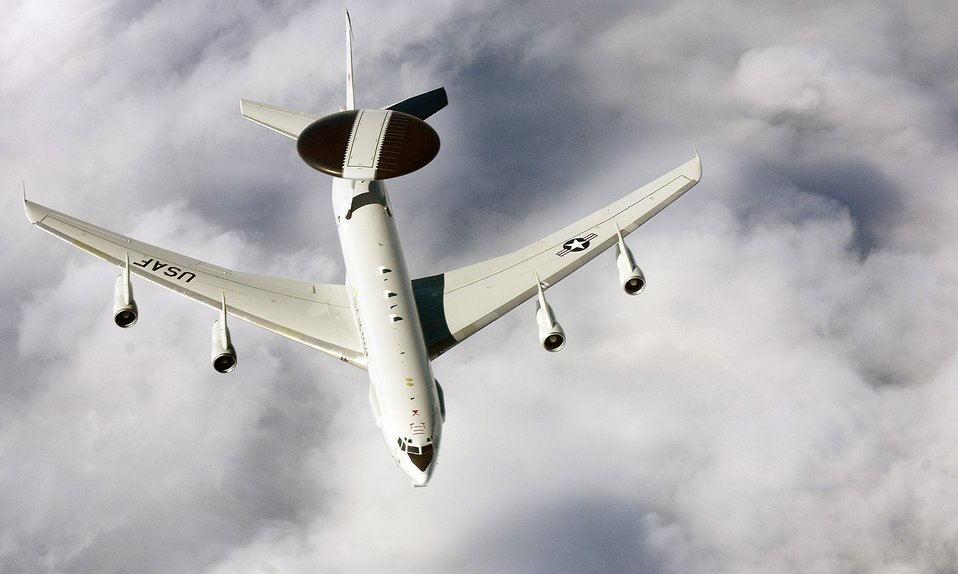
Airmen, drug runners play game of cat and mouse

An E-3 Sentry airborne warning and control system aircraft flies a surveillance mission over the eastern Pacific Ocean Aug. 1 to find drug runners. The Sentry is deployed to Forward Operating Location Manta, Ecuador, from Tinker Air Force Base, Okla.